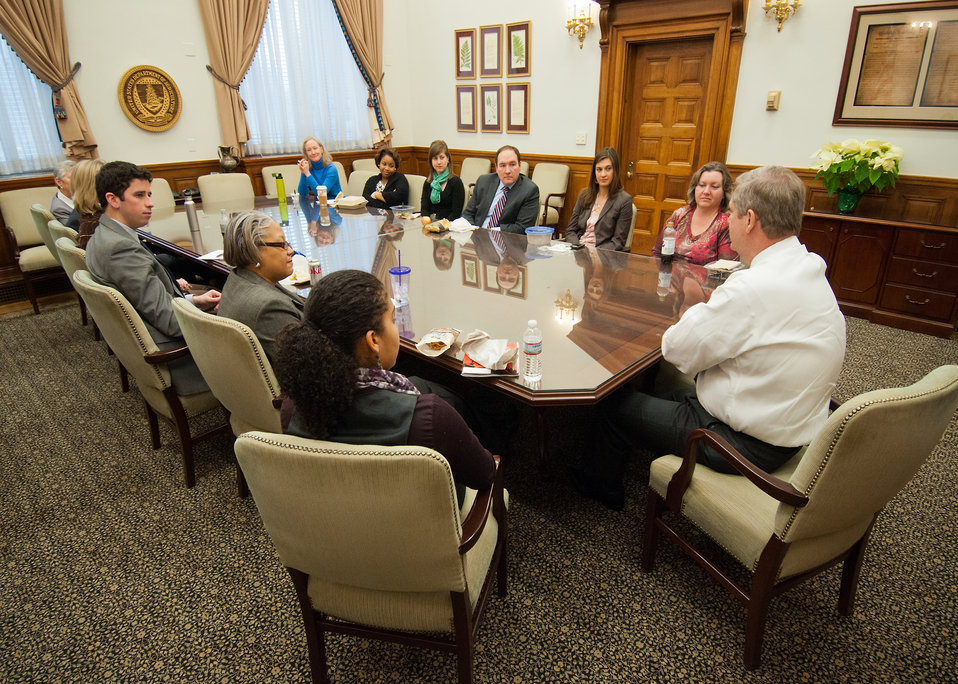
Occasionally Agriculture Secretary Tom Vilsack meets with members of his cabinet for a Brown Bag lunch to discuss the role they play and to thank them for their dedication and diligence. Secretary Vilsack met with staff members of the Office of Congressional Relations in Washington, D.C. on Monday, January 23, 2012. From left: Ryan Caldwell, Special Assistant, Janice Williams, Special Assistant, Kevin Bailey, Legislative Assistant, Food Nutrition and Consumer Services and Rural Development, Jennifer Yezak, Director, External and Intergovernmental Affairs, Janice Griffiths, Special Assistant, Ann Wright, Deputy Assistant Secretary, Biotechnology, Outreach and Civil Rights, Departmental Administration, Ashlee Johnson, Special Assistant, Monica Wyant, Special Assistant, Todd Batta, Legislative Director, Conservation, Energy, Budget and Appropriations and Dairy, Ashley Martin, Special Assistant, Julie Gordon, Special Assistant, Secretary Vilsack.